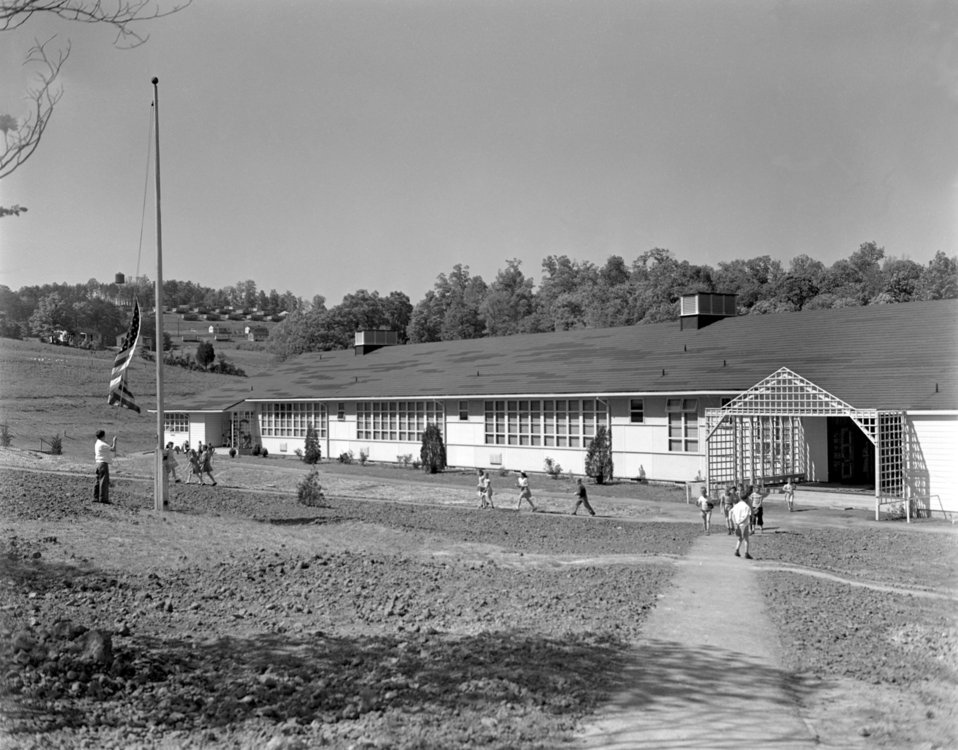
Pine Valley School Oak Ridge 1947

3457-4c DOE photo Ed
Westcott 5-13-1947 Oak Ridge Tennessee